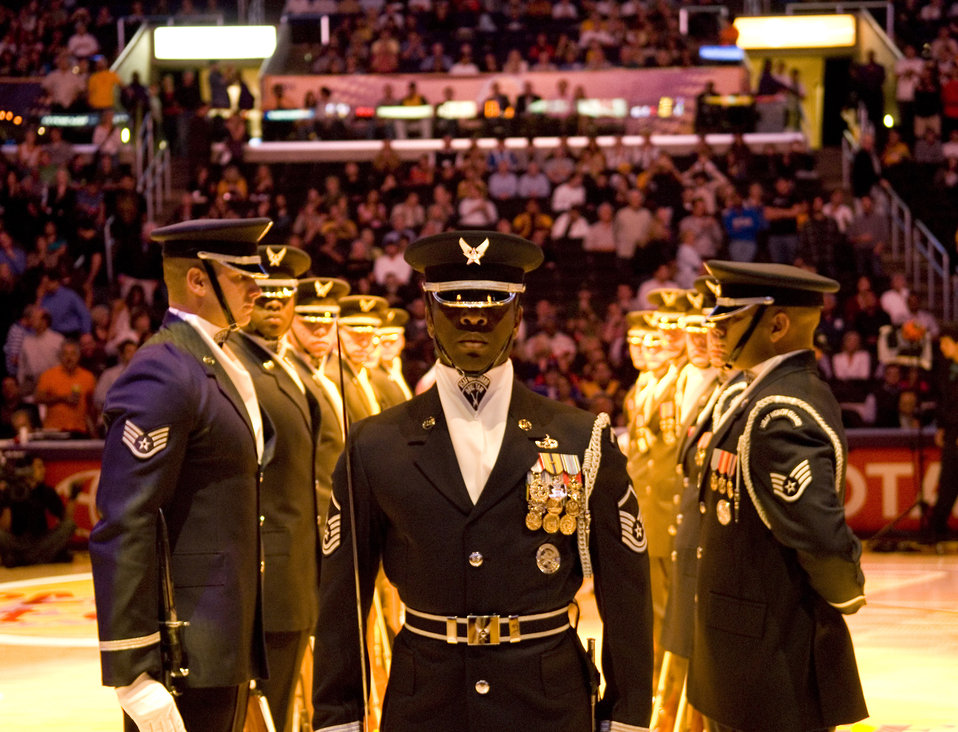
Air Force takes center stage as Bulls visit Lakers

The Air Force Honor Guard drill team performs during a nationally telecast Chicago Bulls and Los Angeles Lakers basketball game in front of nearly 20,000 fans Nov. 18 at the Staples Center in Los Angeles.